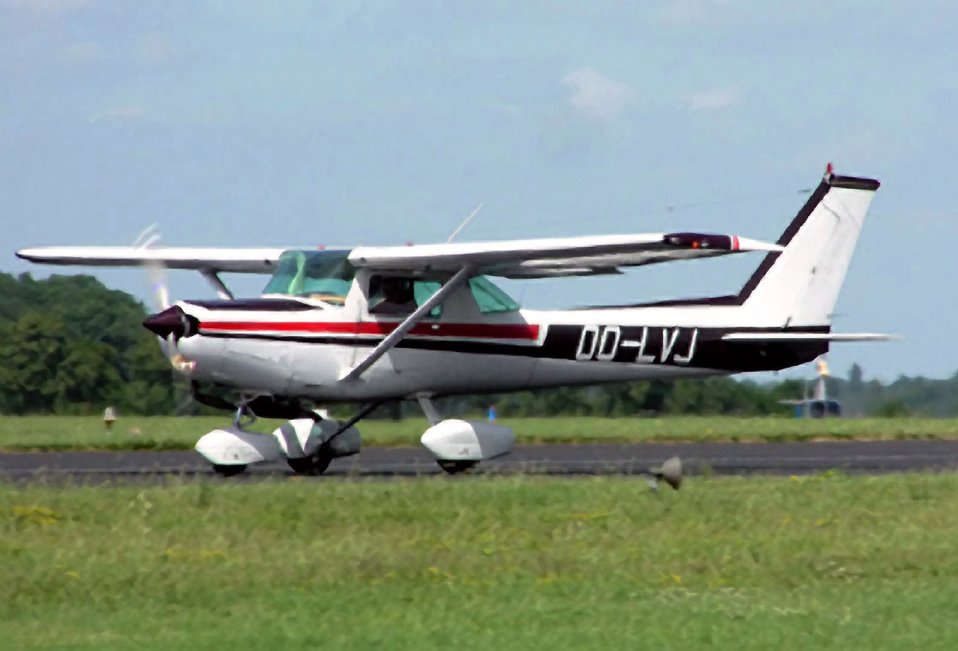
Air Force Web site can prevent air mishaps for civilian pilots

Officials in Air Combat Command are reaching out to private civilian pilots by publicizing a Web site, www.seeandavoid.org, designed to prevent mid-air collision with military aircraft. The site allows users to locate their flight path and determine how they can avoid flying through military operating areas.